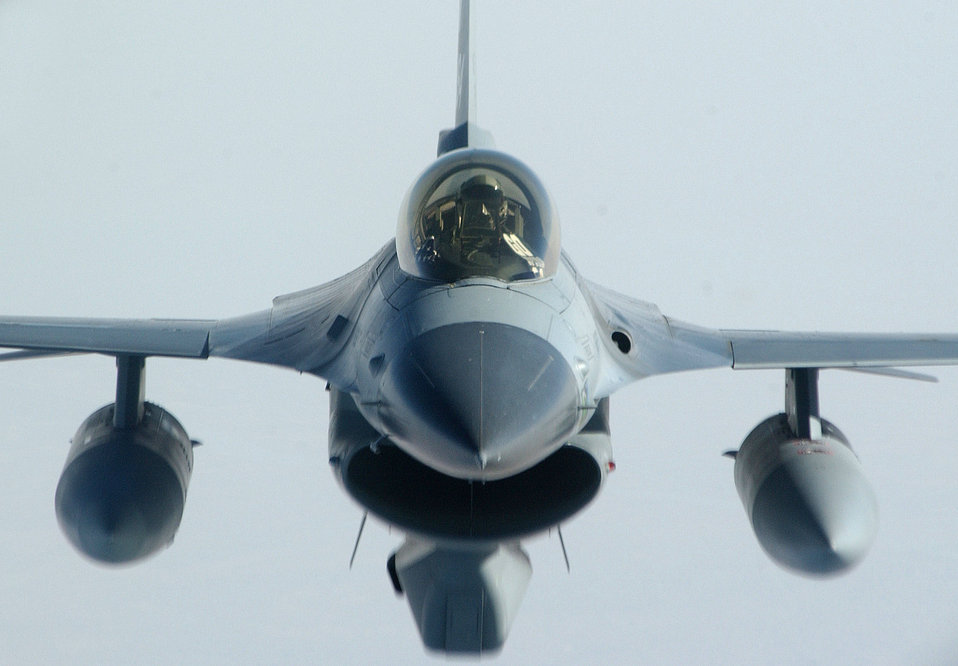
Fighting Falcons

SOUTHWEST ASIA - An F-16 Fighting Falcon flies a combat sortie supporting Operation Iraqi Freedom on May 7. The aircraft and pilot are assigned to Balad Air Base, Iraq.